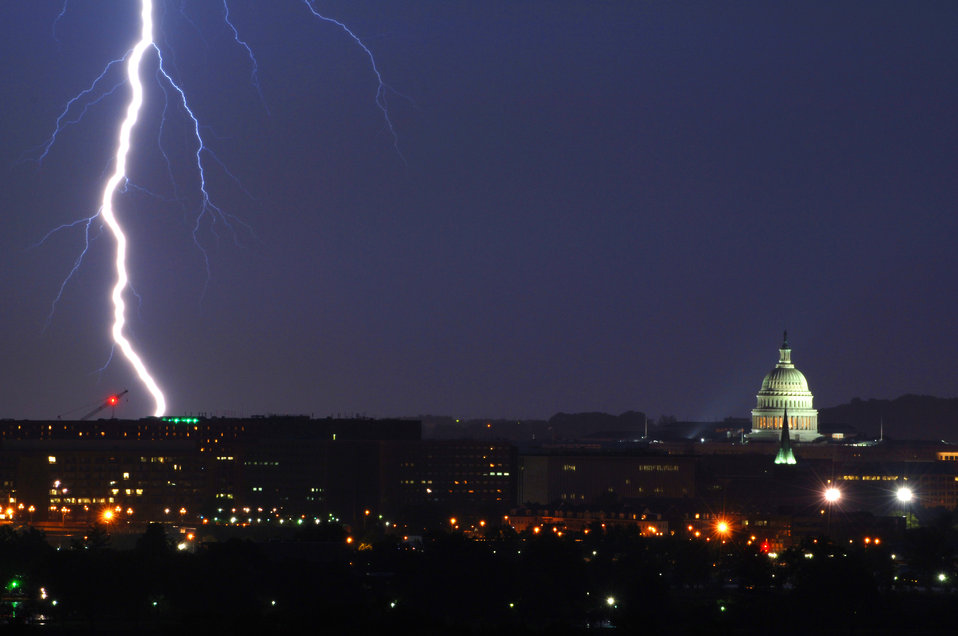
D.C. shock

WASHINGTON -- Lightning strikes near the U.S. Capitol building during a thunderstorm here May 14.